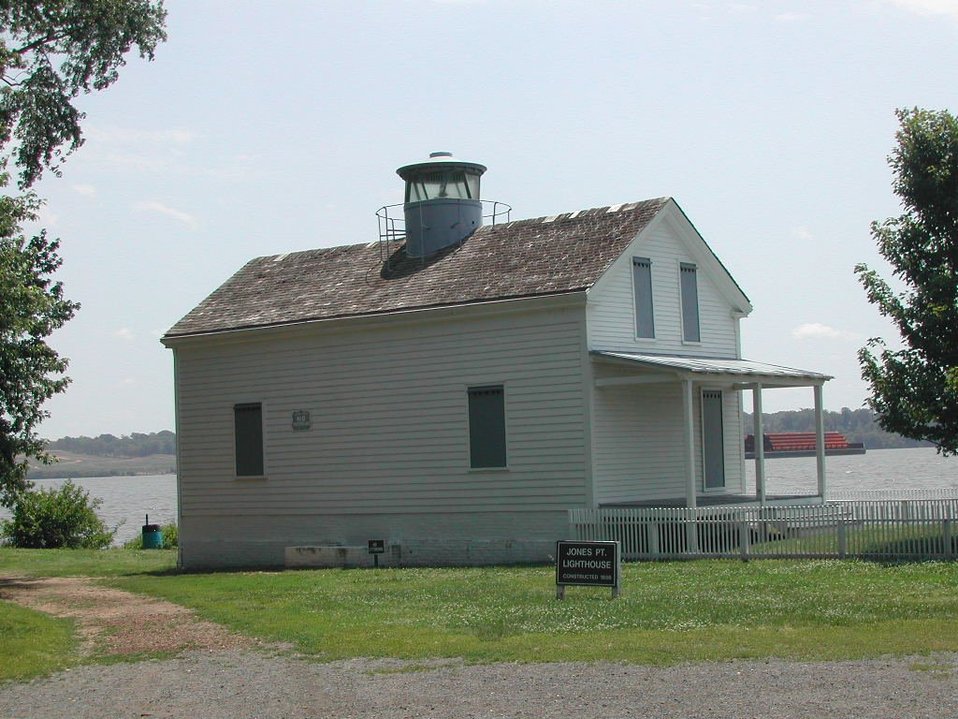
Jones Point Lighthouse